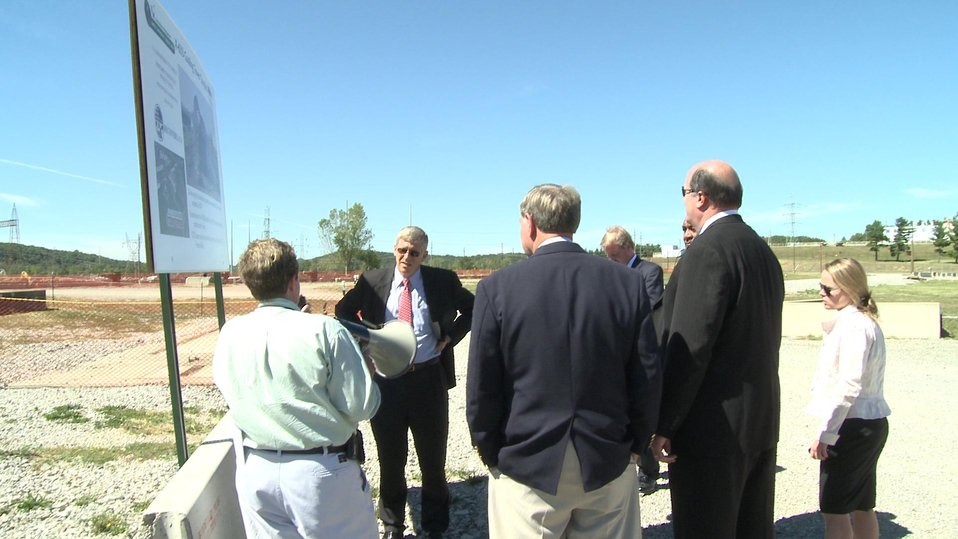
LATA/Parallax Portsmouth Project Manager Linda Bauer (with megaphone) describes to Deputy Secretary Poneman the American Recovery and Reinvestment Act project to dismantle and remove a large cooling tower complex at the Portsmouth Site that spanned 20 acres. They are standing at the site of the former cooling towers and pump house, where demolition of the $11 million project was completed in June 2010.